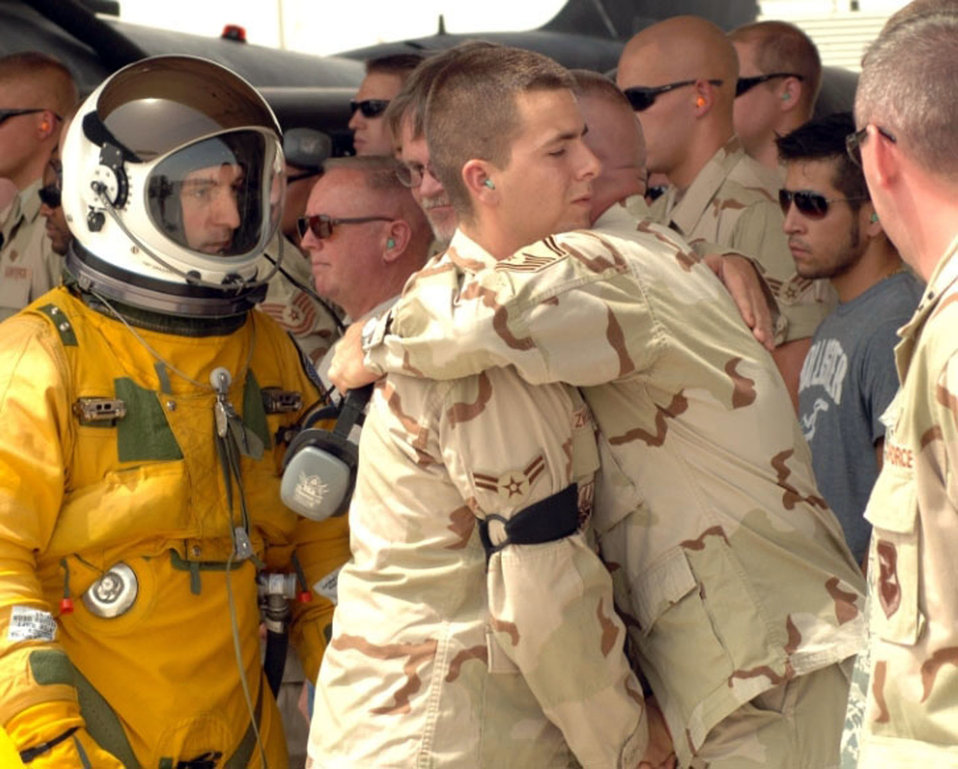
U-2 nose art honors fallen Soldier

An Air Force senior master sergeant hugs A1C Alexander Zwilling, whose brother, Army Cpl. Gunnar W. Zwilling, was killed July 13, 2008, in Afghanistan.